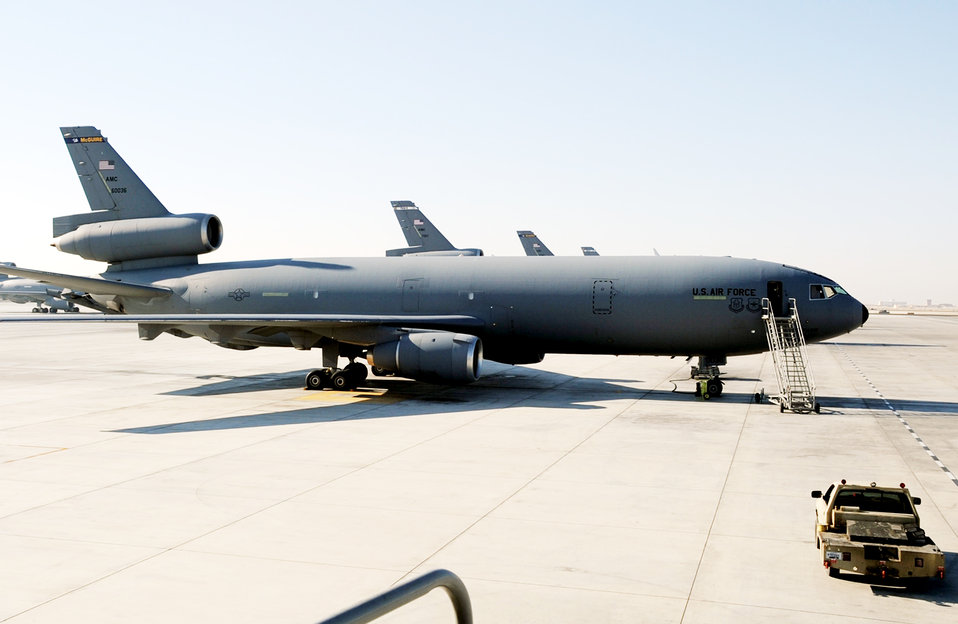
KC-10s keep aircraft flying in Southwest Asia

KC-10 Extender aircraft assigned to the 380th Air Expeditionary Wing are parked on the flightline Jan. 8, 2010 at an air base in Southwest Asia. The KC-10 is one of the airframes in the U.S. Central Command area of responsibility that provides air refueling capability to provide global reach for overseas contingency operations.